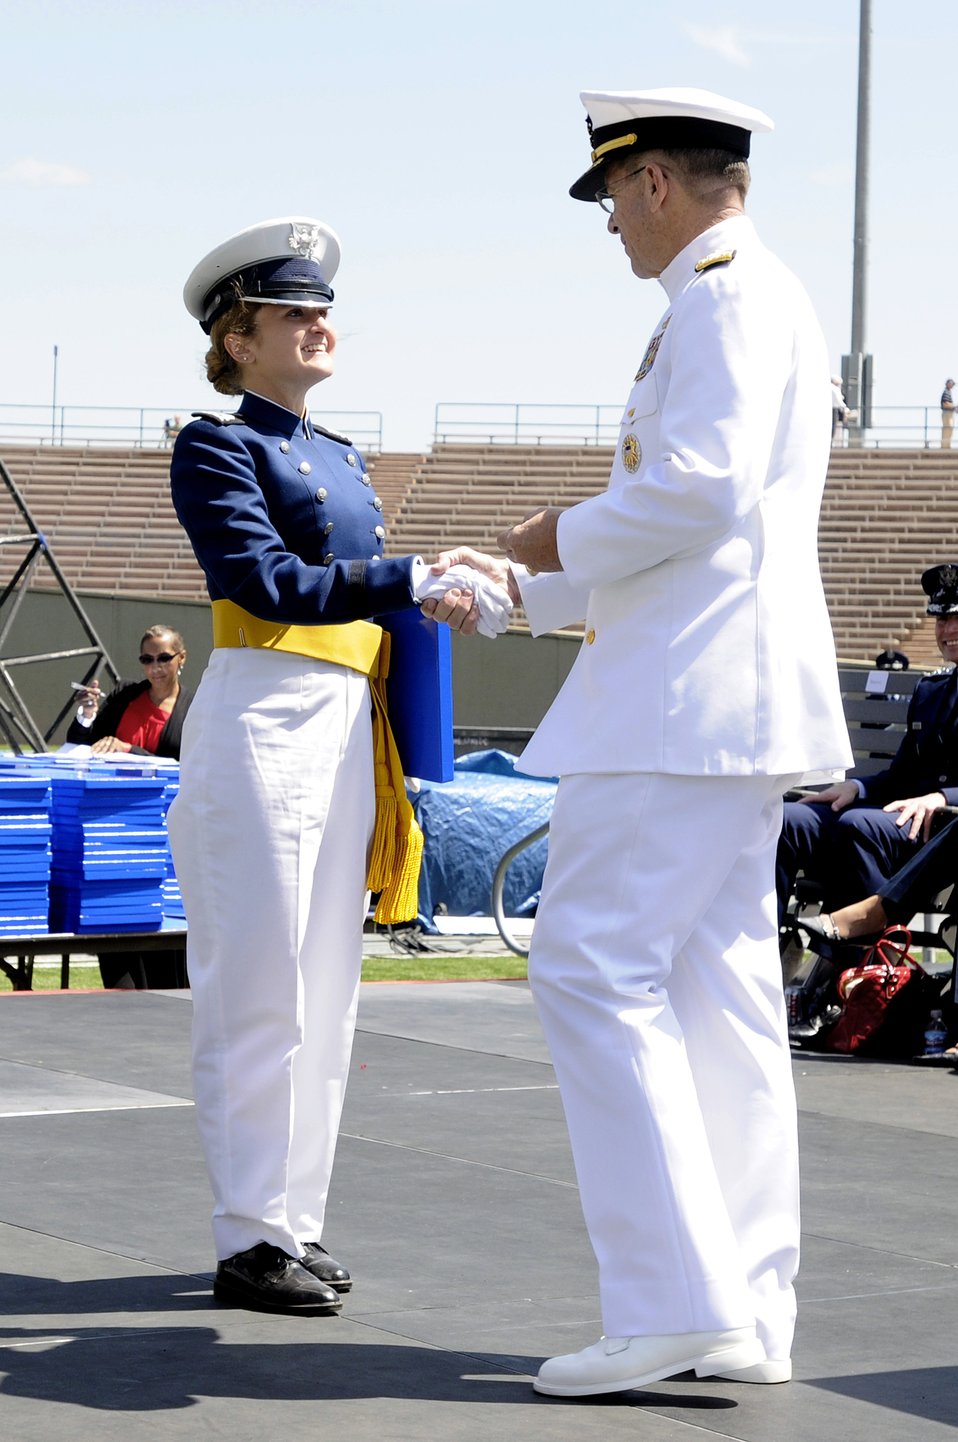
Joint Chiefs chairman delivers Academy commencement

Navy Adm. Mike Mullen congratulates Cadet 1st Class Brittany Morreale on her Rhodes Scholar achievements May 26, 2010, during graduation ceremonies at the U.S. Air Force Academy, Colo. Admiral Mullen was the commencement speaker for the graduation. He is the chairman of the Joint Chiefs of Staff.